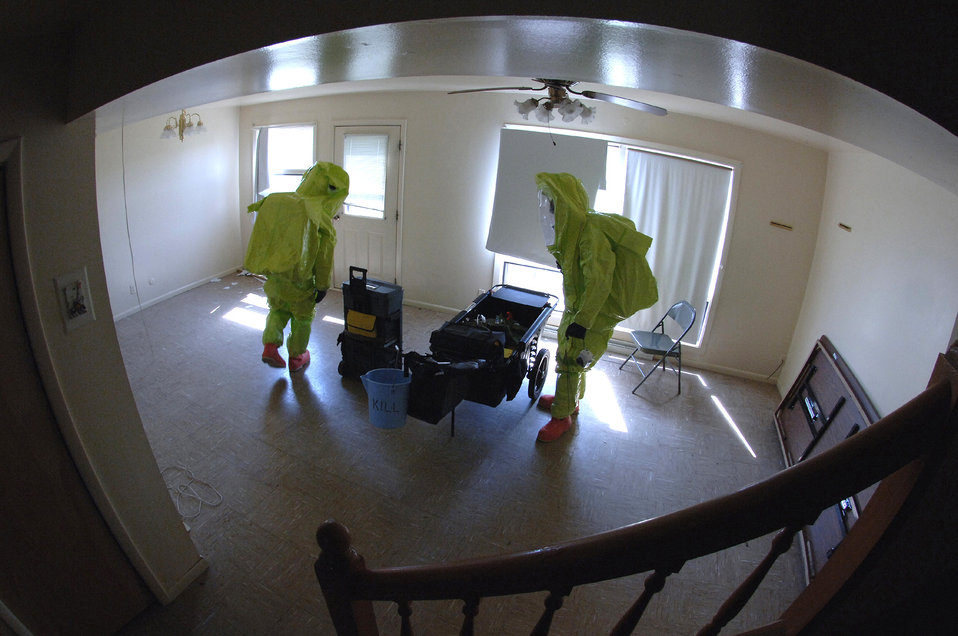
Contaminated house

Staff Sgts. Keith Bryant (left) and Dave Fischer pack up their gear and prepare to exit a simulated contaminated house at Ellsworth Air Force Base, S.D. The Air National Guard's 82nd Civil Support Team based in Rapid City participated in a joint weapons-of-mass-destruction training exercise.